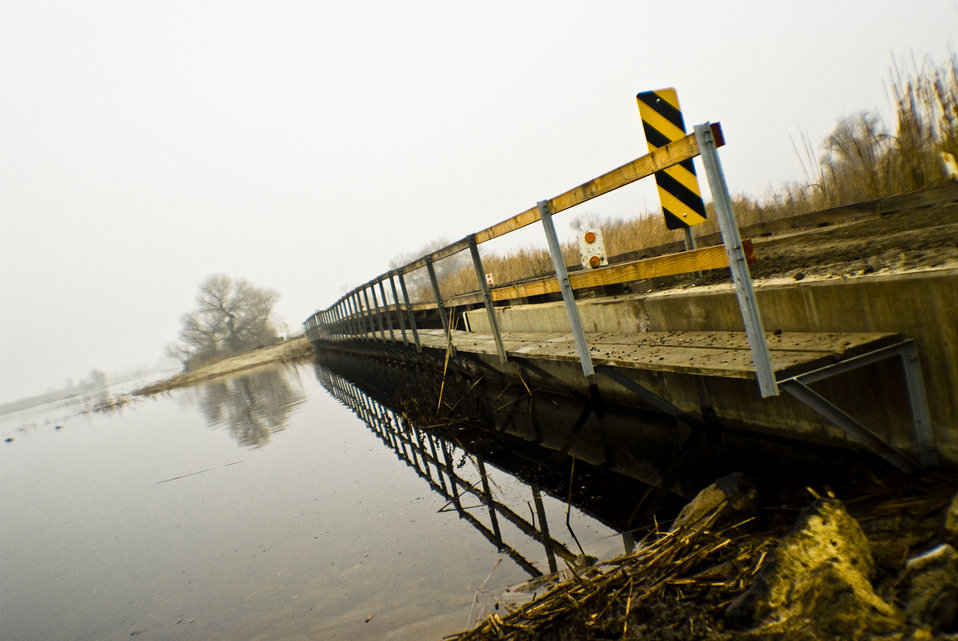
Bridge at Kern NWR

Kern National Wildlife Refuge
Rehabilitation of water control structure

Justine Belson/USFWS